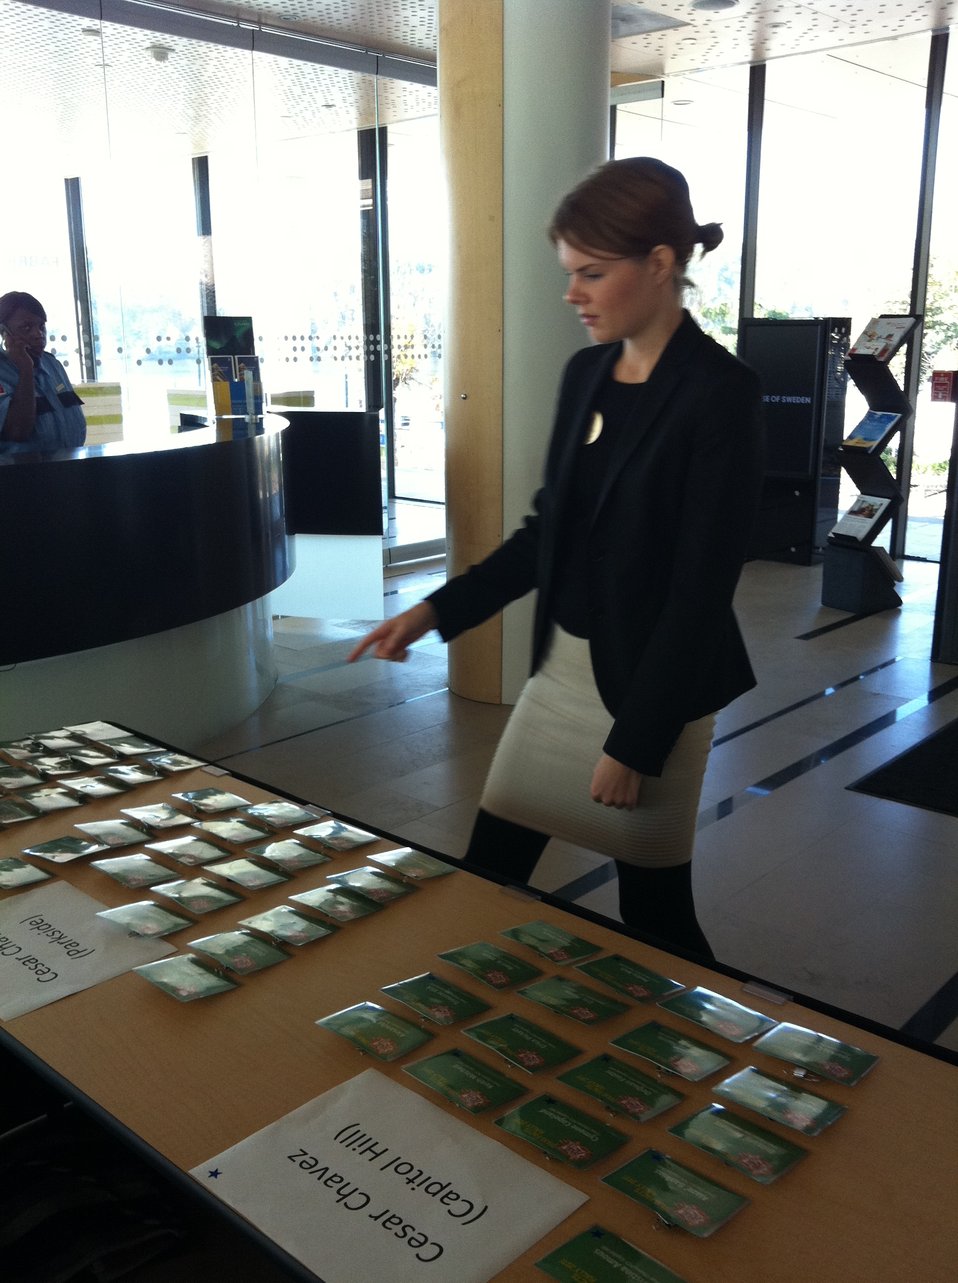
Mentor 1